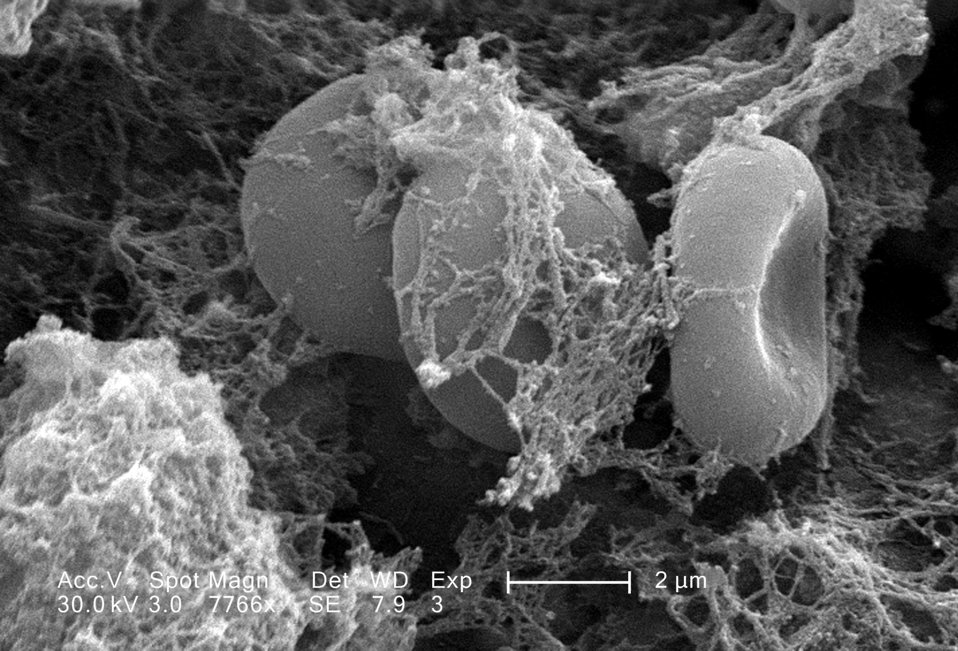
This scanning electron micrograph (SEM) depicted a closer view of number of red blood cells found enmeshed in a fibrinous matrix on the luminal surface of an indwelling vascular catheter; Magnified 7766x. In this instance, the indwelling catheter was a tube that was left in place creating a patent portal directly into a blood vessel.